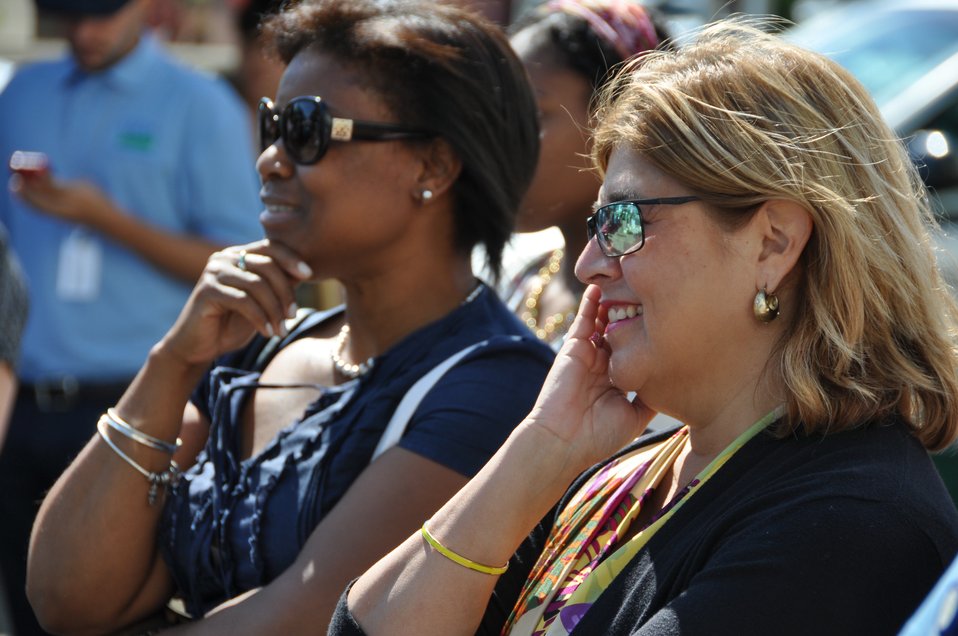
Alonzo at Feds Feed Families Kick-Off

AMS Administrator Anne Alonzo listens to speakers at the kick-off for Feds Feed Families.